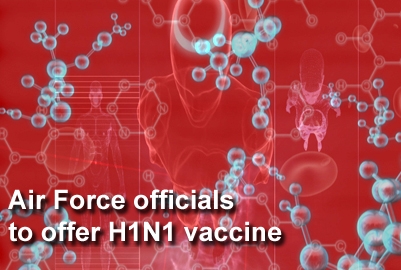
H1N1 vaccine

Air Force officials are set to provide 1 million H1N1 vaccination doses by early November.